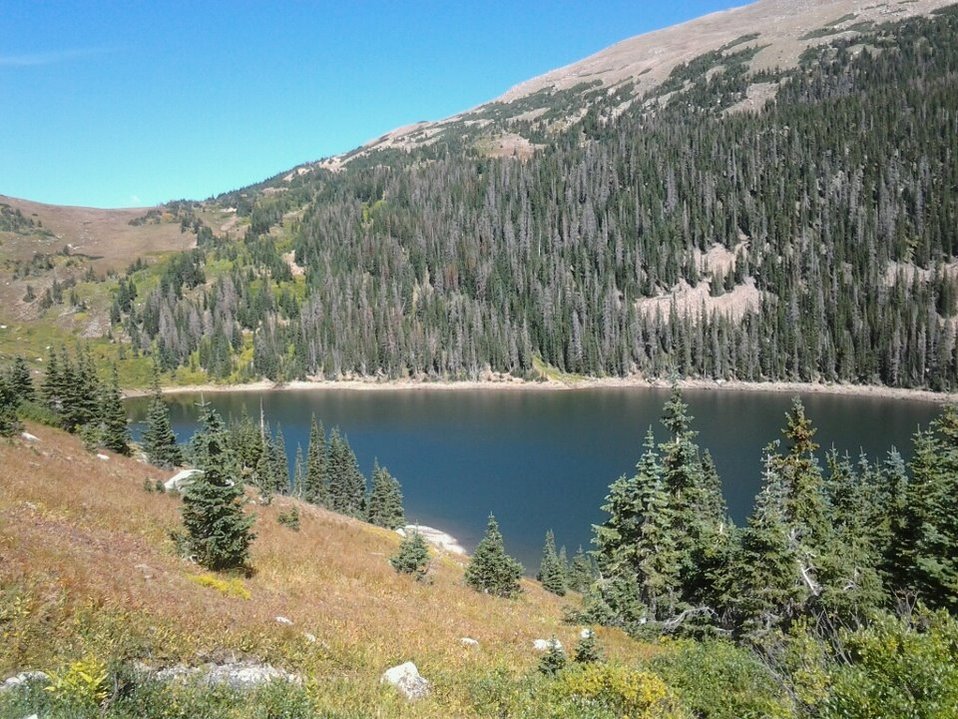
Lake in the Rocky Mountains, CO

Photo: Julia Pendergrass, USFWS
2011 Wilderness Fellow